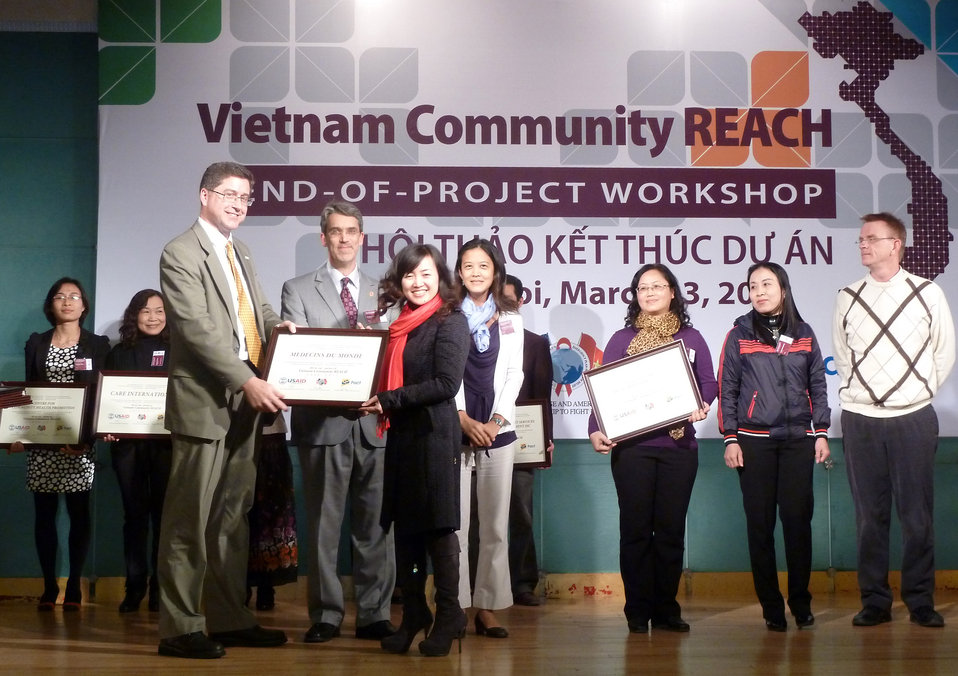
USAID, PEPFAR, and Pact award certificates to local and international partners for their work in addressing HIV in Vietnam

Community REACH project close-out with USAID and implementing partner, Pact